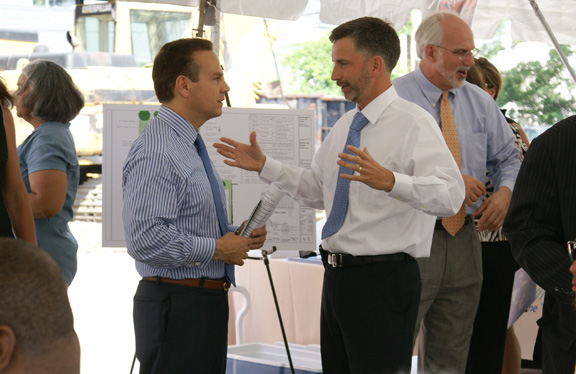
RI Ground Breaking 6/28/10

Assistant Secretary for Management Dan Tangherlini (R) and Providence Mayor David N. Cicilline (L) before official kickoff for construction of Rhode Island’s first development specifically created to support Rhode Islanders who are returning to the community after incarceration.